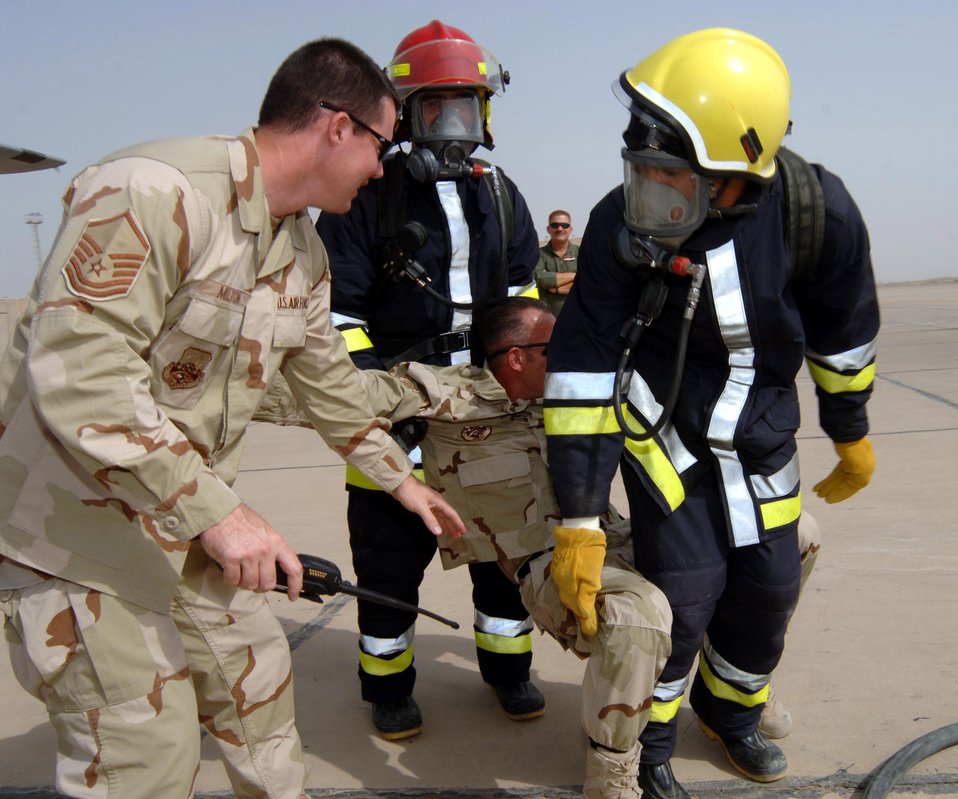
Airmen train Iraqi firefighters at international airport

Master Sgt. Craig Milton observes firefighters from the Iraqi air force remove Staff Sgt. Vance Vansteel from an Iraqi C-130 flight deck July 9 at New Al-Muthana Air Base, Iraq. Sergeant Vansteel represented an unconscious pilot during a simulated aircraft fire. The exercise trained Iraqis to respond to an aircraft fire by shutting down engines and removing an unconscious pilot. U.S. Airmen set up the scenario and guided them through the process. Sergeants Milton and Vansteel are firefighters with the 447th Expeditionary Civil Engineer Squadron.